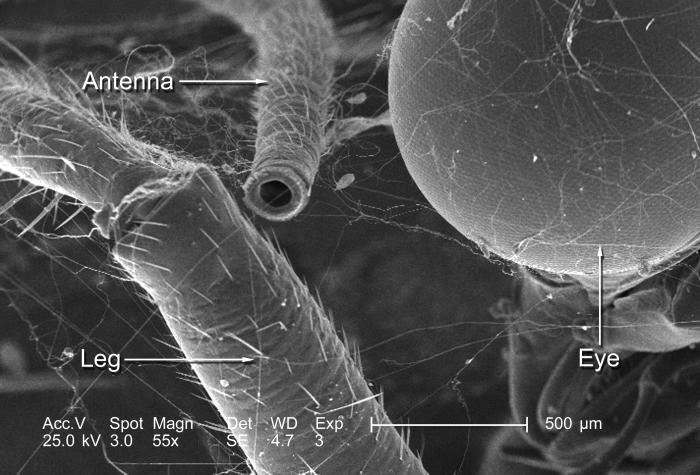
Included in this scanning electron micrographic (SEM) view, magnified 55x, were aspects of the eye, antenna, and jointed leg of an unidentified dragonfly that had been found deceased on the grounds of the Decatur, Georgia suburbs. Note what appears to be the 'hollowed-out' antenna, the distal end of which had been broken off. When it was alive, this now empty lumen would have been filled with the dragonfly's blood, which is known as hemolymph, as well as soft tissues including nerves and muscles that had dried up after the organism's demise.